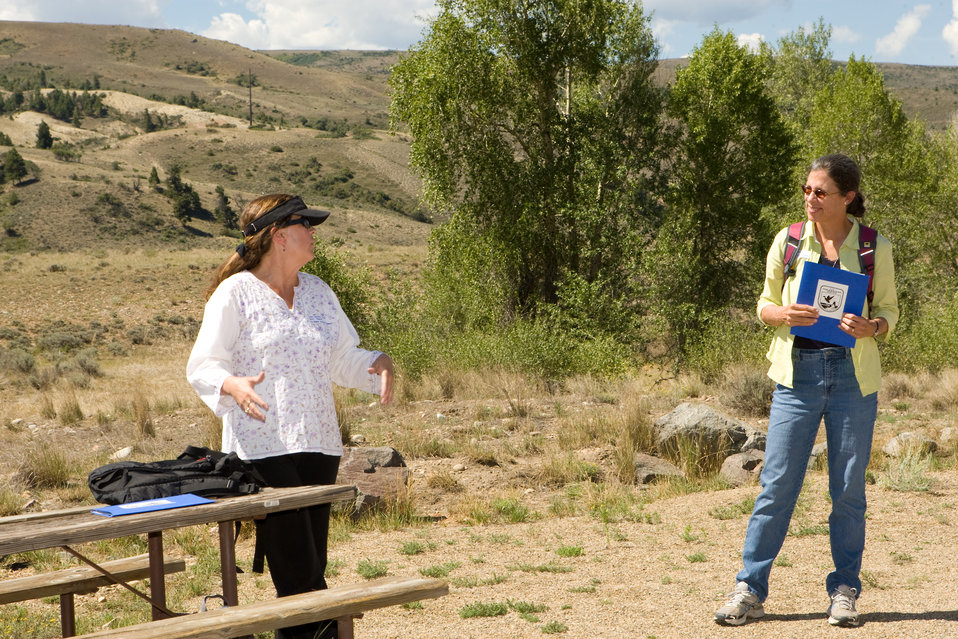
Colorado Rare Plant Conservation Initiative

The Colorado Rare Plant Conservation Initiative (RPCI) is a partnership of 23 statewide and regional agencies, private organizations, and academic institutions working to conserve 121 rare plants in Colorado. As part of these efforts the group developed the Colorado Rare Plant Conservation Strategy, developed Best Management Practices to reduce energy development impacts, addressed climate change, and developed focused strategies for the conservation of individual species at eight priority landscapes. The group has also worked to coordinate volunteer efforts for plant conservation across the state.